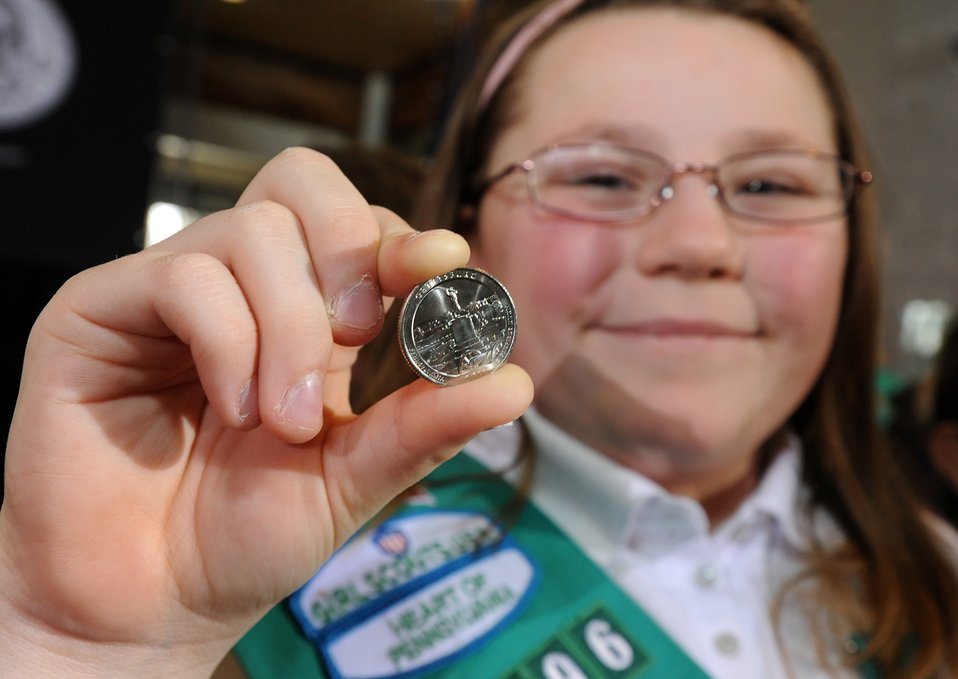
Gettysburg National Military Park Quarter Launch

A local Girl Scout is the proud owner of a brand new Gettysburg National Military Park quarter - the sixth coin in U.S. Mint's America the Beautiful Quarters Program.